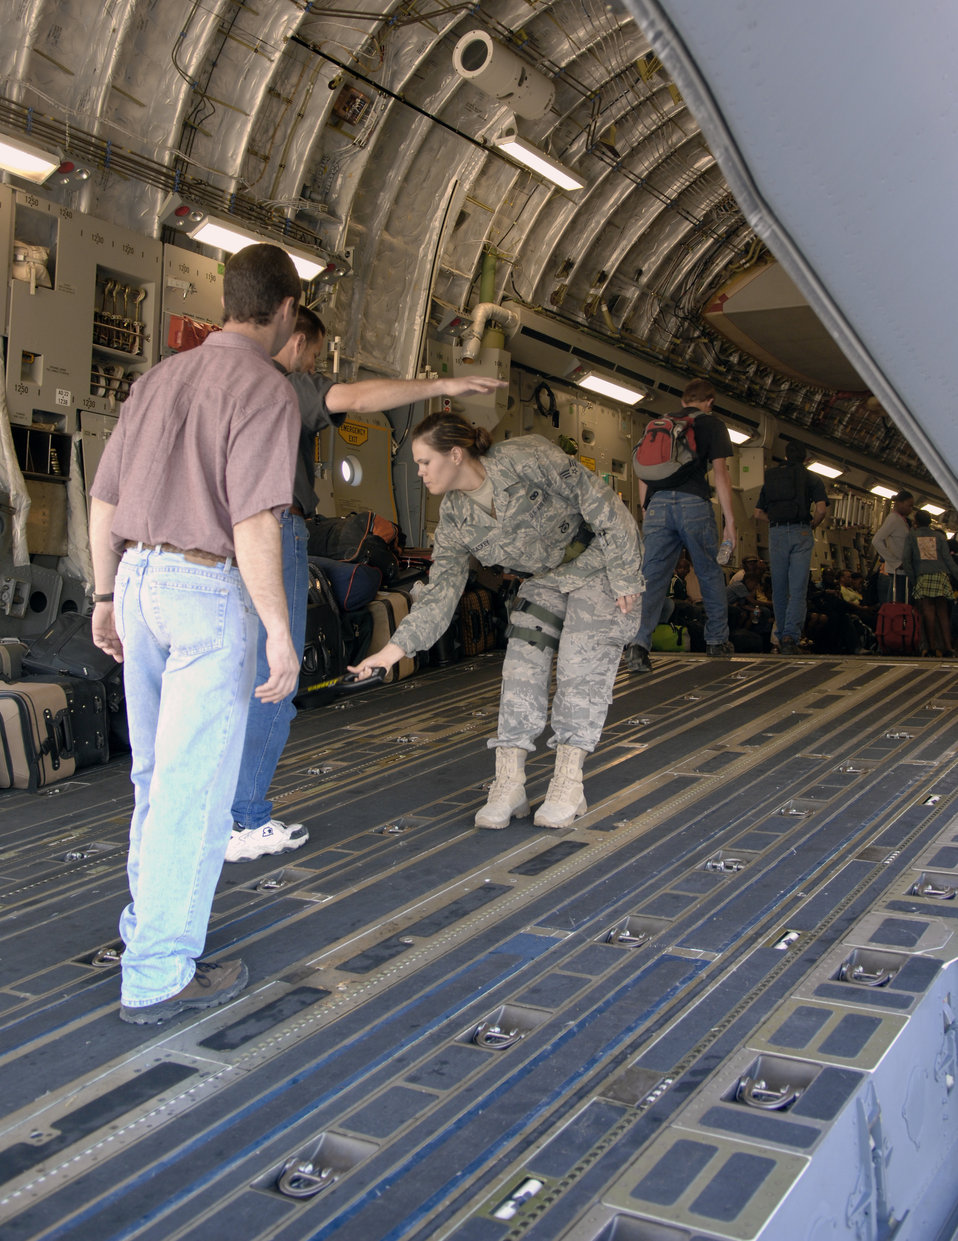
Pope members support Operation Unified Response

Senior Airman Rebecca McCaskey screens U.S. citizens boarding a C-17 Globemaster III Jan. 21, 2010, at the Toussaint L'Ouverture International Airport in Port-au-Prince, Haiti. Airman McCaskey is a 43rd Security Forces Squadron Raven from Pope Air Force Base, N.C. Raven crews provide not only security in flight, but also during loading and unloading on the ground.